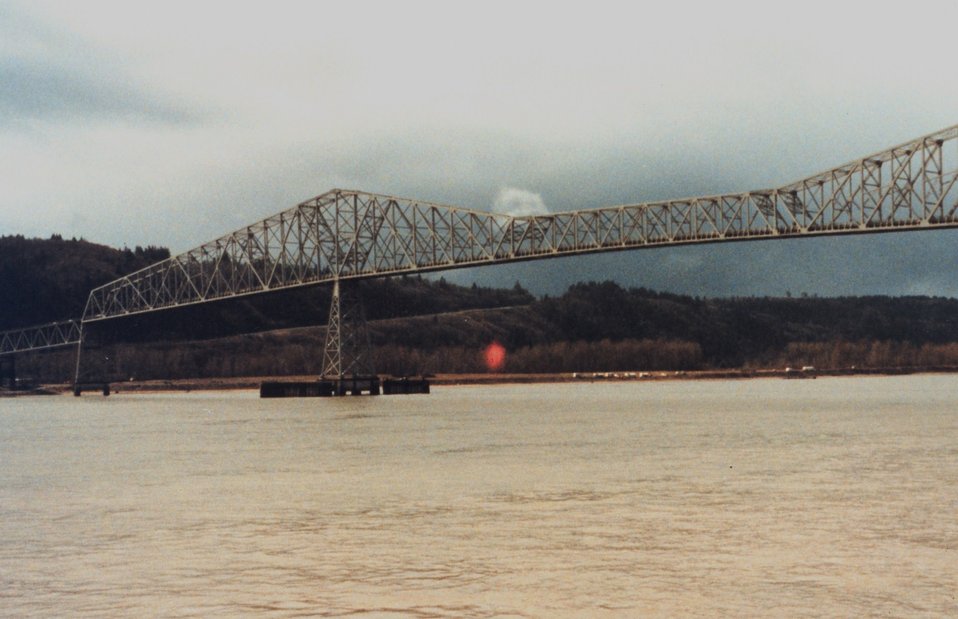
Highway 433 Bridge over the Columbia River at Longview